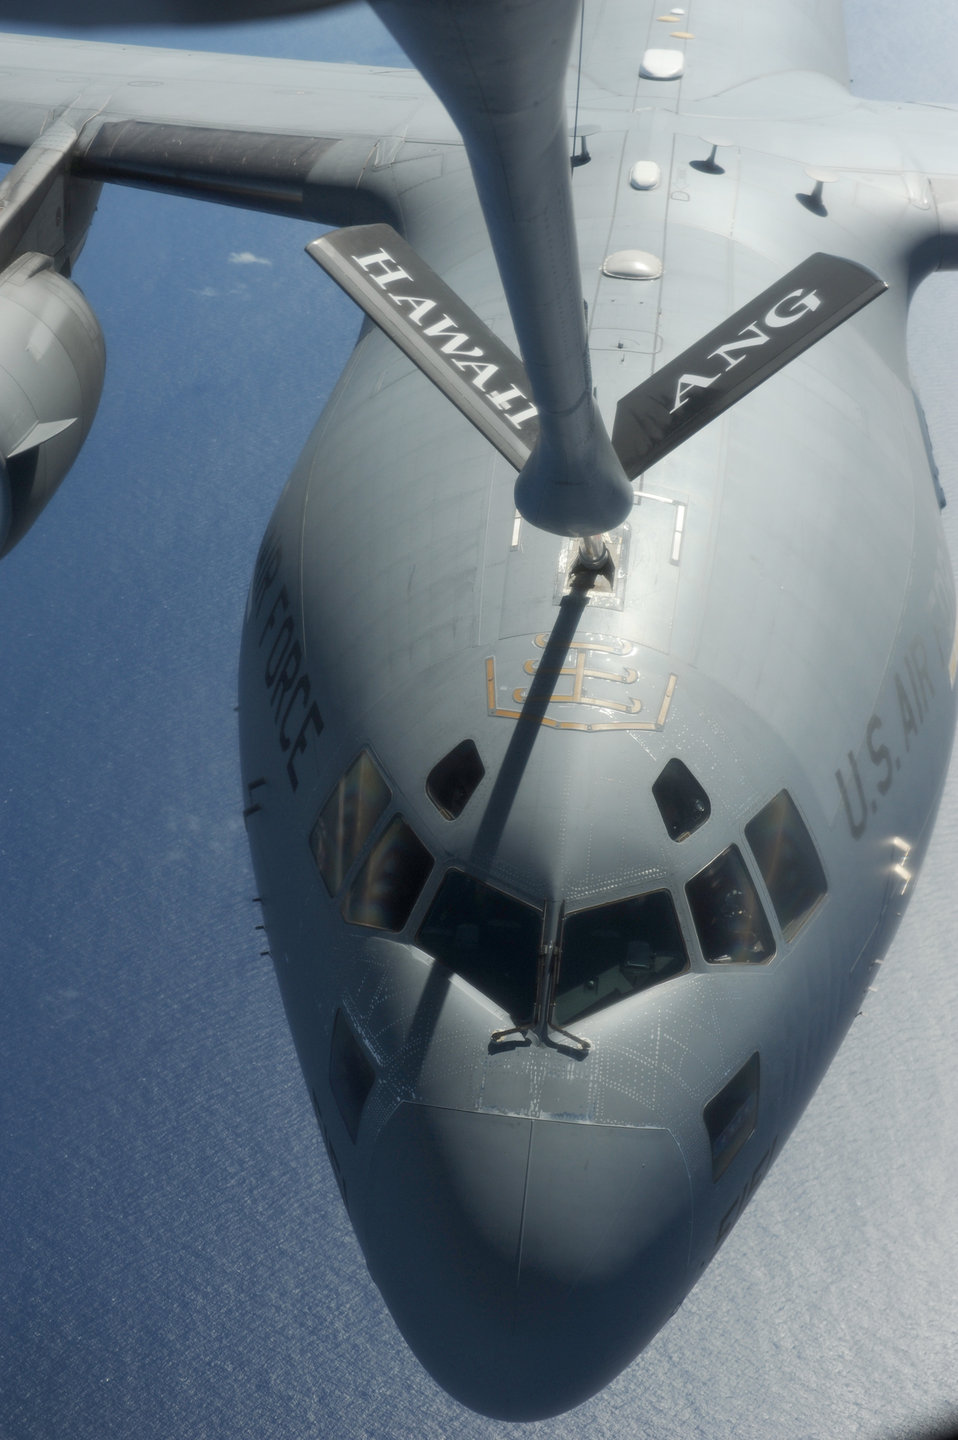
C-17 refuels over the Pacific

A C-17 Globemaster III takes on fuel from a KC-135 Stratotanker Sept. 18, 2010, over the Pacific Ocean during a Total Force partnership mission to Andersen Air Base, Guam. The C-17 is assigned to the 15th Wing at Joint Base Pearl Harbor-Hickam, Hawaii, and the KC-135 is from a Hawaii Air National Guard's 204th Air Refueling Squadron.